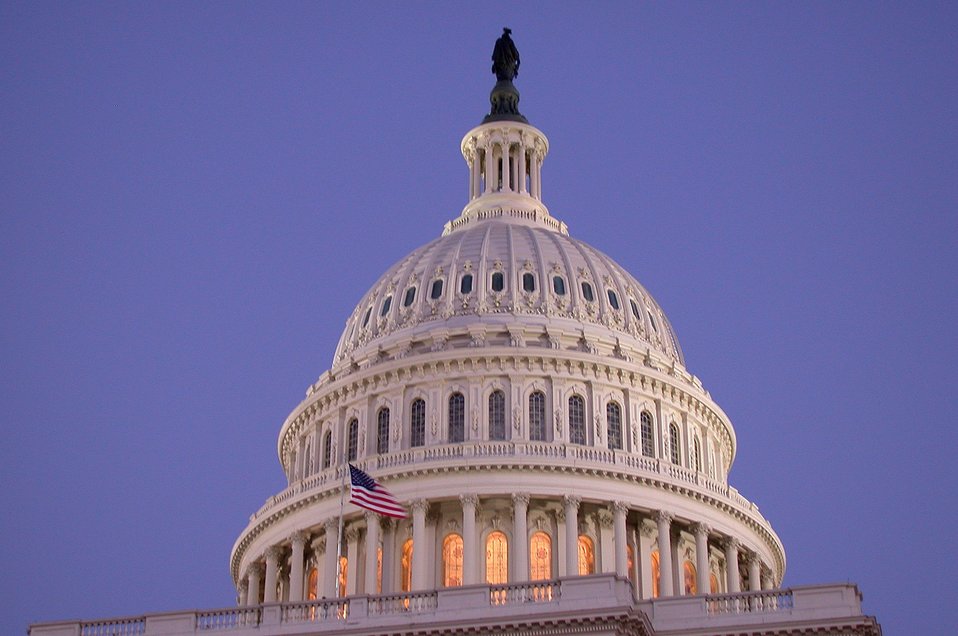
United States Capitol building.